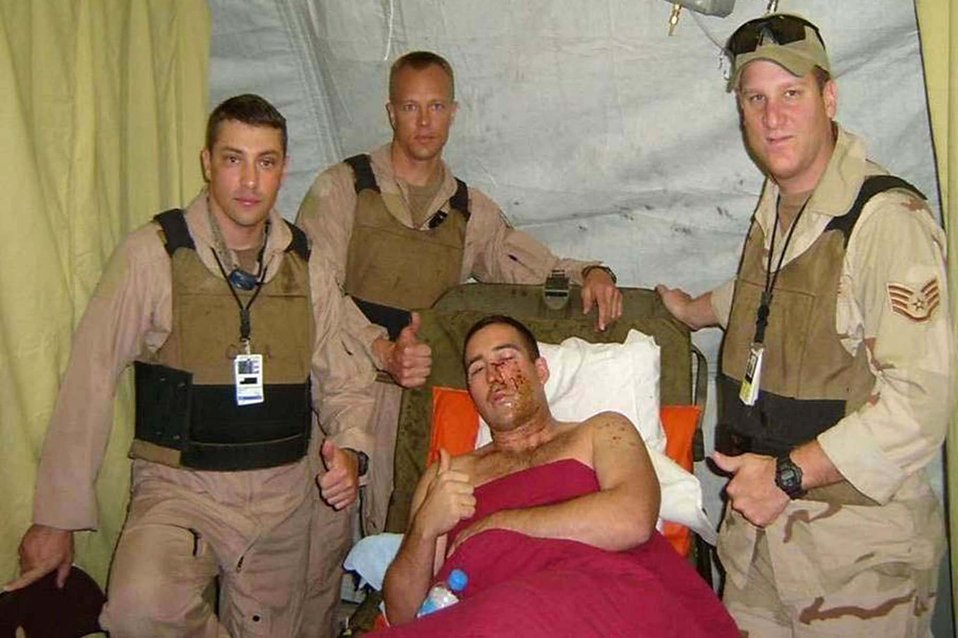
Captain 'walks the line' for fellow Airmen

Capt. Thomas Lessner is visited at the Baghddad International Airport field hospital in Iraq by fellow MH-53 Pavelow helicopter crew members in 2004 after being shot down while flying a mission in Iraq. The crew members are (left to right) Senior Master Sgt. Rob Colannino, the right door flight engineer/gunner; Master Sgt. Randy Kensey, the left door gunner; and Staff Sgt. Jesse Lee, the tail gunner. Captain Lessner's crew visited him everyday while he was there.